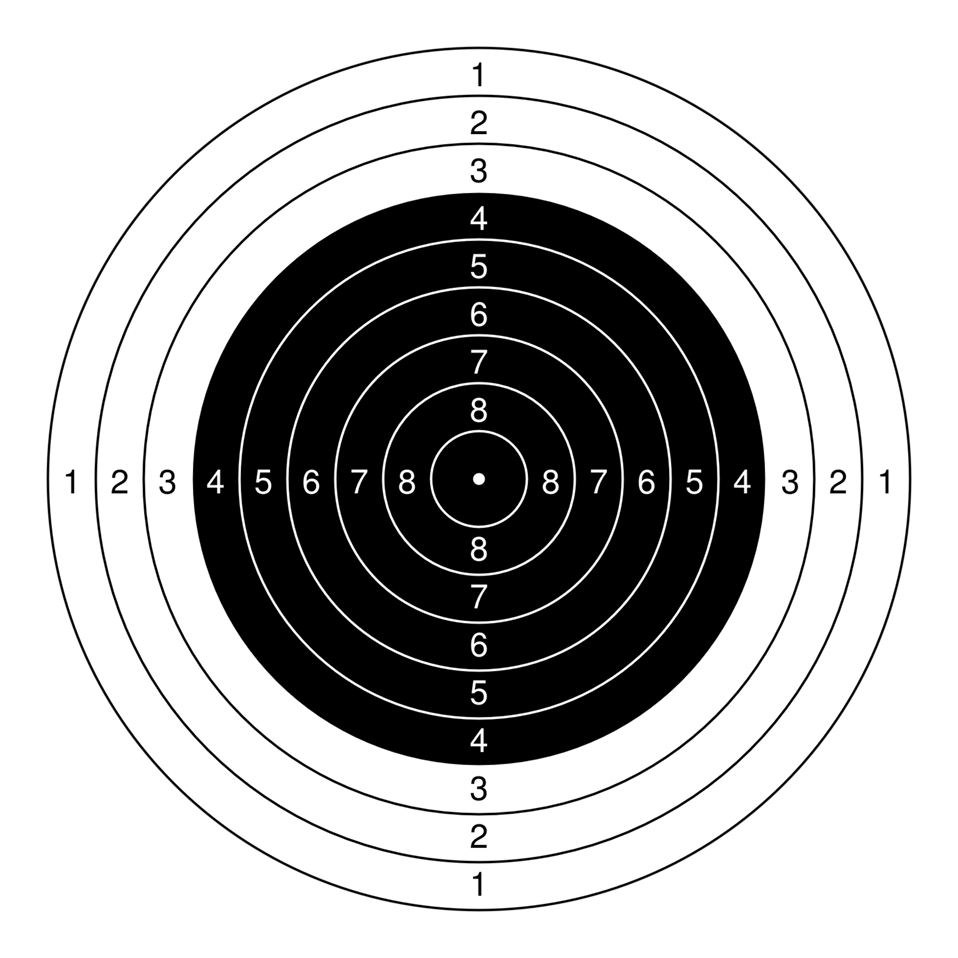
Target for air rifle at 10 meter shooting range. Based on ISSF technical rules. The target: total Ø = 45.5 mm. 4 ring Ø = 30.5 mm. 9 ring Ø = 5.5 mm. 10 ring Ø = 0.5 mm, height 1.4 m above the floor.